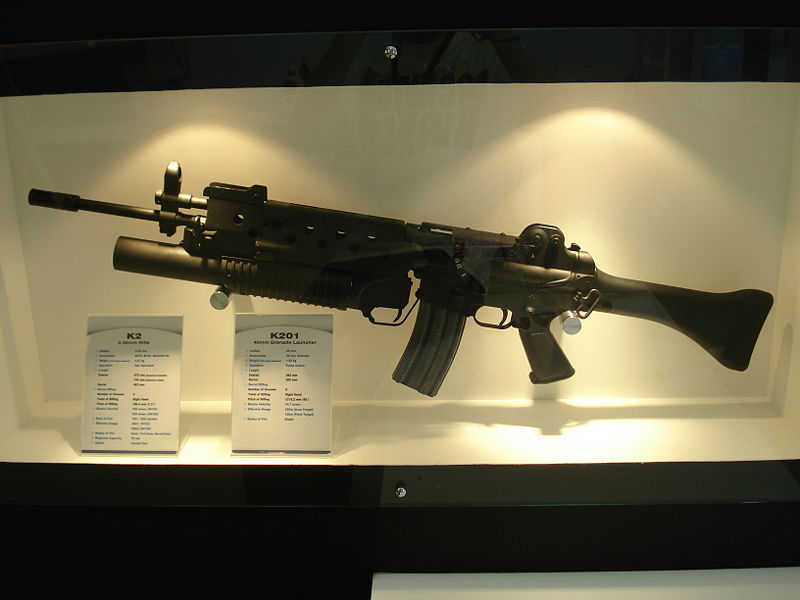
Author: Andrew Date:20/01/08